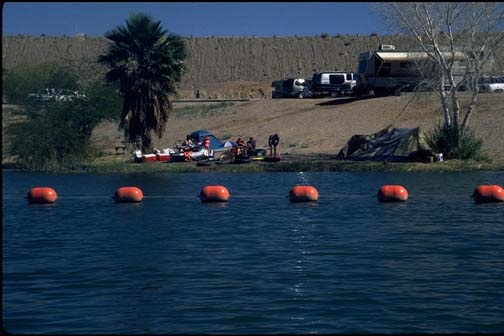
Tent and RV camping at Squaw Lake Recreation Area.